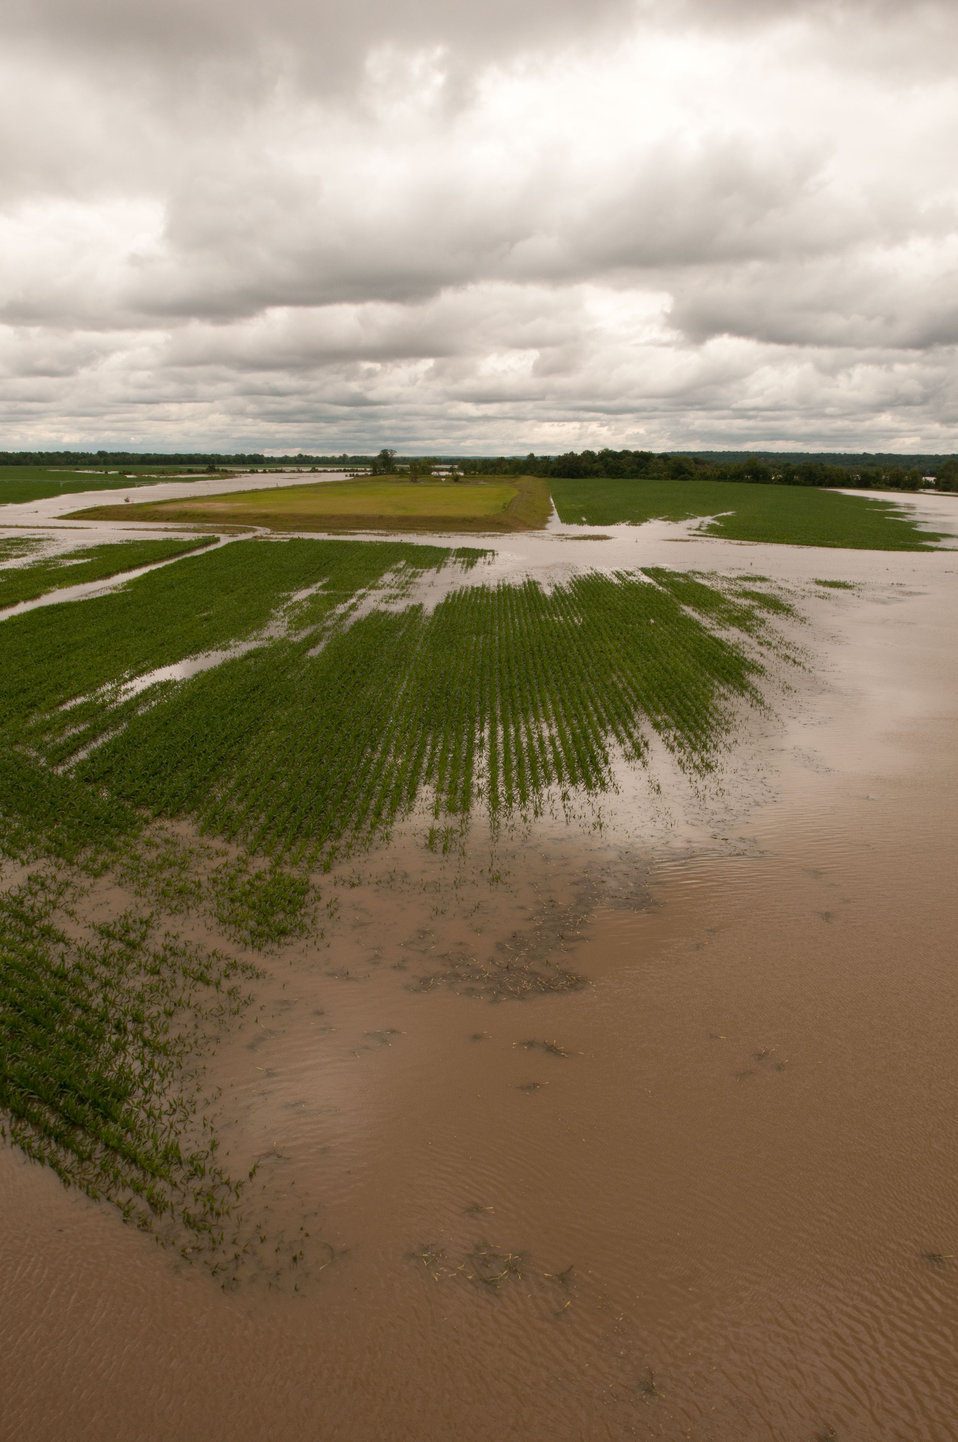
Mississippi River floodwaters have pushed into Yazoo River and into this cornfield near Yazoo City, MS, on Monday, May 16. 2011.